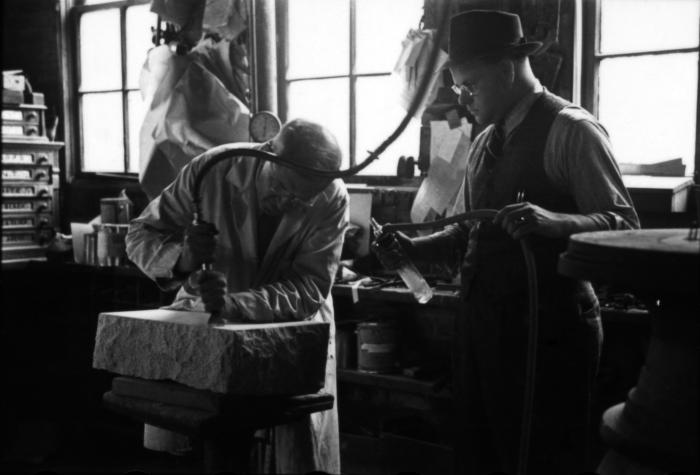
This October 1947 photograph was provided by the Center for Disease Control's (CDC), National Institute for Occupational Safety and Health (NIOSH). The image depicted a stone cutter who was in the process of carving a granite gravestone with a pneumatic drill in a Kansas workshop. The worker was wearing appropriate eye protection, but not sporting the requisite filtered respirator or mask, which would have limited his exposure to airborne granite dust particulates. Standing next to the worker was an industrial hygienist sampling the air, in order to test for the presence of, or the quantity of airborne particulates liberated by the grinding process. Workers can be exposed to potential respiratory health hazards, as well as other physical injuries when working in stone cutting and quarrying industries.